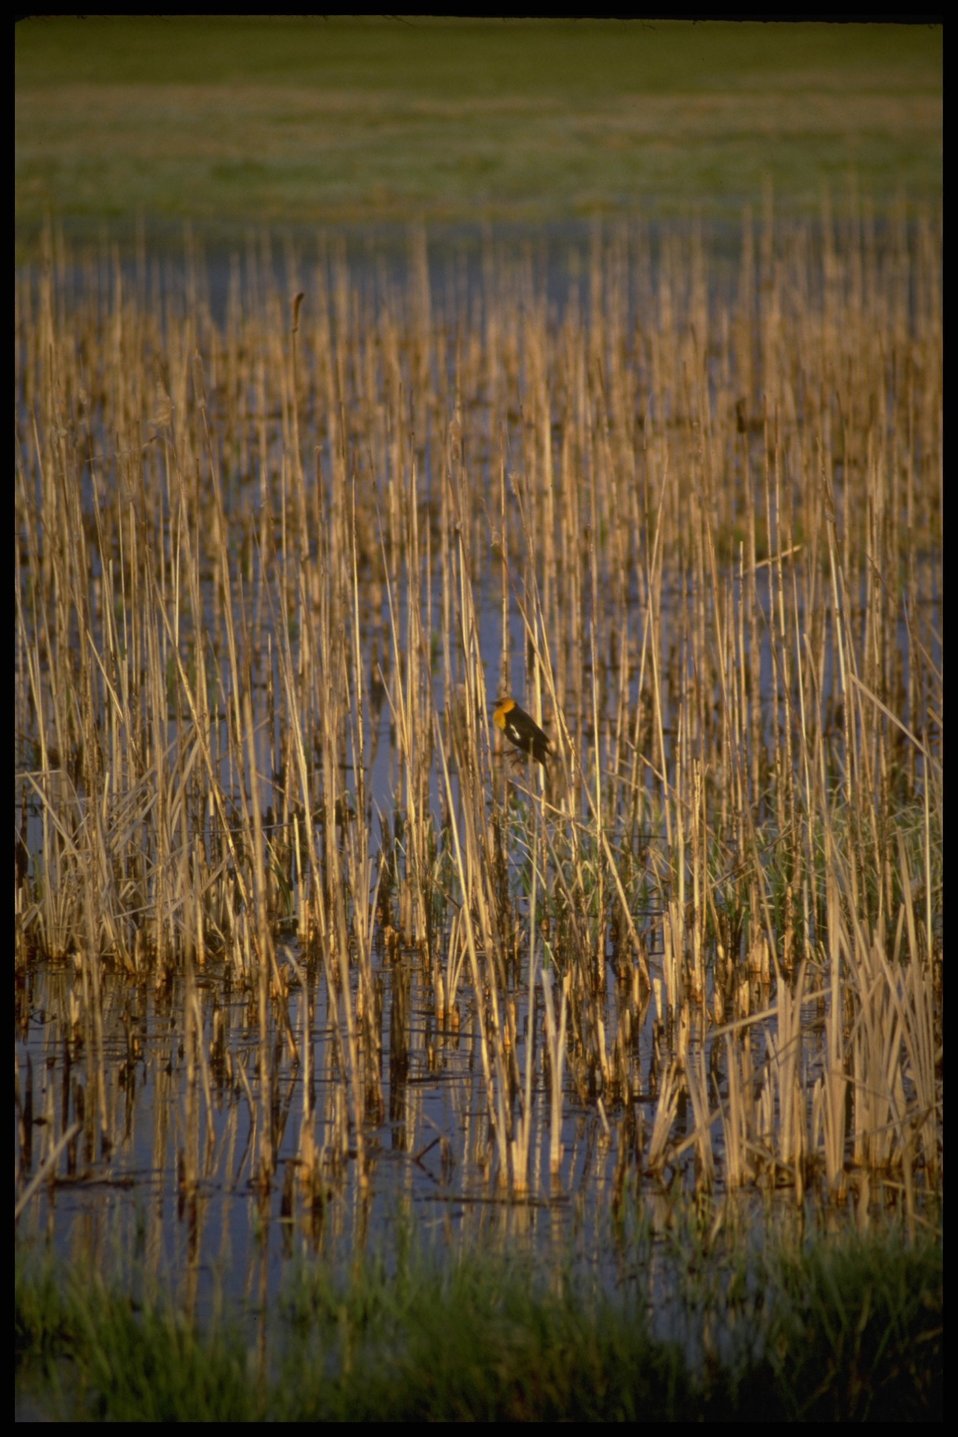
Far shot of Yellow Winged Black Bird, Lakeview District.